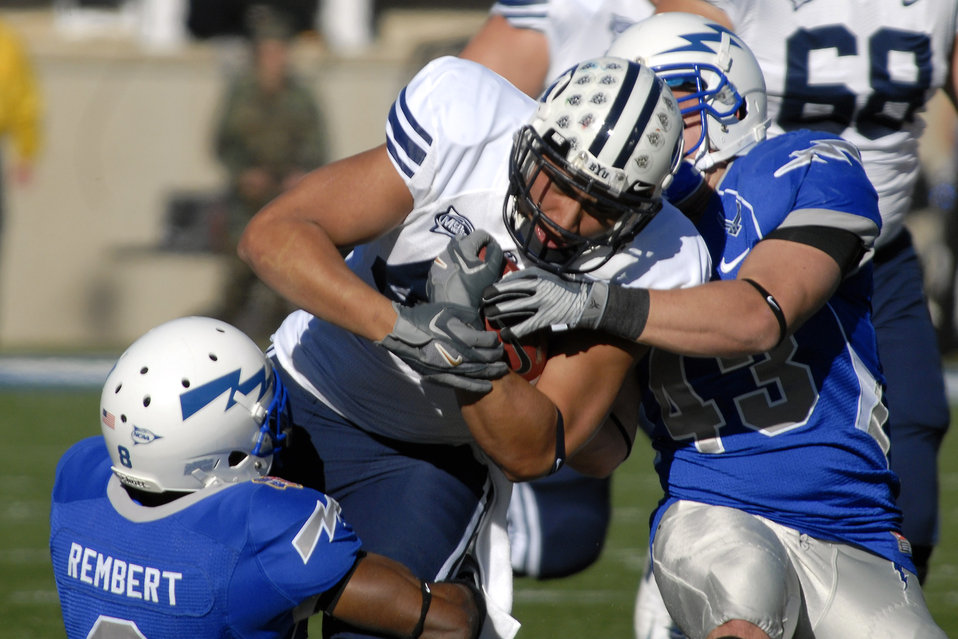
Rough third quarter ground Falcons

Air Force Falcon cornerback Reggie Rembert and Junior inside linebacker Justin Moore wrap up as the Falcons lost 38-24 to Brigham Young University Nov. 15 at Falcon Stadium in Colorado.